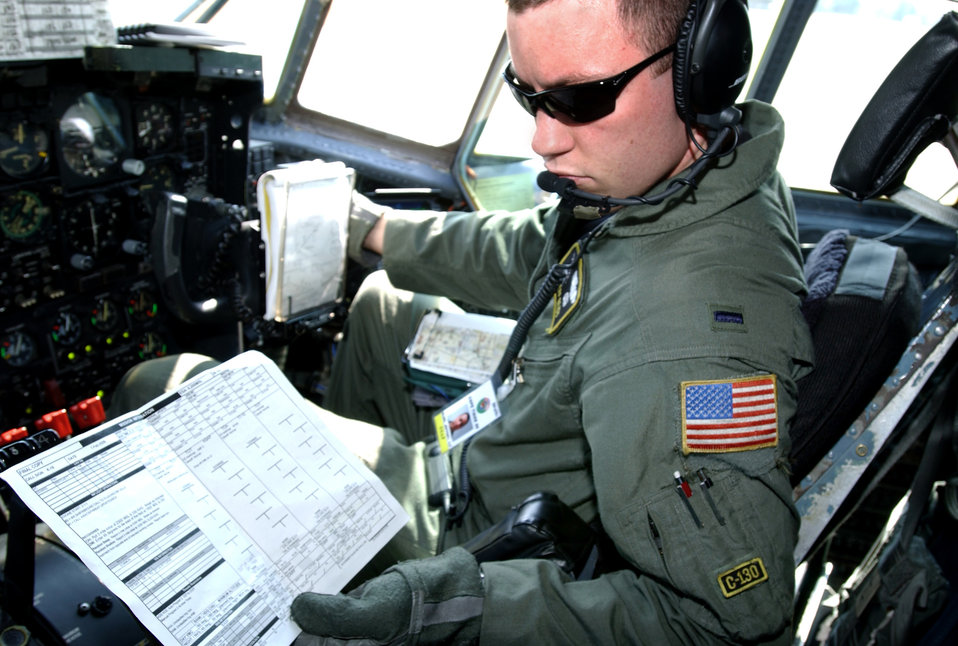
Cope Tiger '06

KORAT ROYAL AIR FORCE BASE, Thailand (AFPN) -- First Lt. Jeff Bliss reads information about a Cope Tiger '06 airlift mission inside the cockpit of a C-130 Hercules here Feb. 7. Lieutenant Bliss is one of 300 U.S. military members and 1,000 military members from Thailand and Singapore who are participating in the exercise, headquartered 110 miles northeast of Bangkok. Officials say Cope Tiger provides air-to-air, air-to-ground and large force employment training for crews in a multi-national environment while expanding the capabilities and readiness of U.S. and allied forces. Cope Tiger '06 is scheduled to end Feb. 18. Lieutenant Bliss is a C-130 pilot with the 36th Airlift Squadron at Yokota Air Base, Japan.